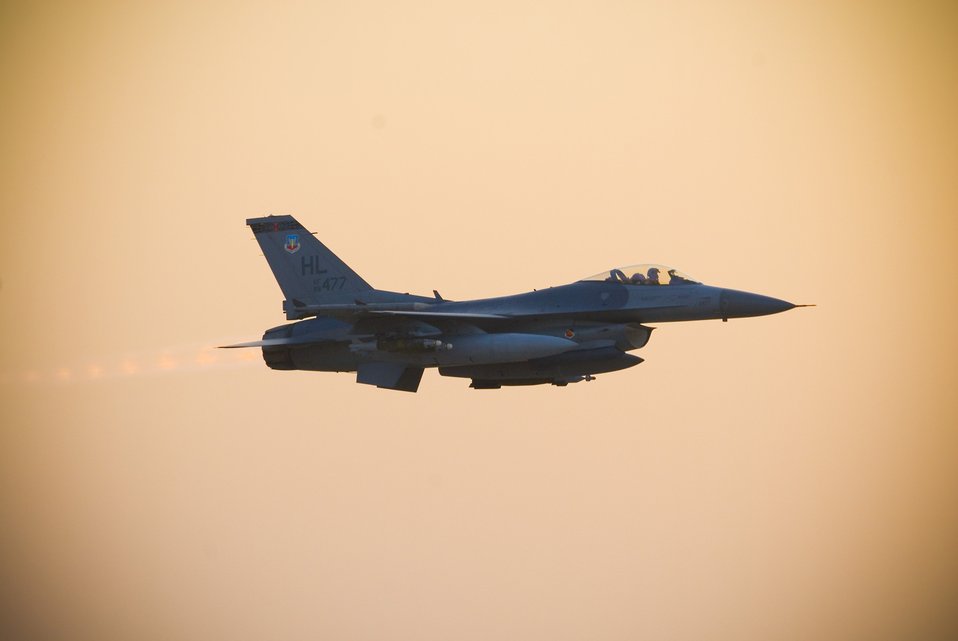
Airpower summary for Jan. 28, 2008

An F-16 Fighting Falcon from the 4th Expeditionary Fighter Squadron at Balad Air Base, Iraq, takes off on another mission supporting coalition forces on the ground.